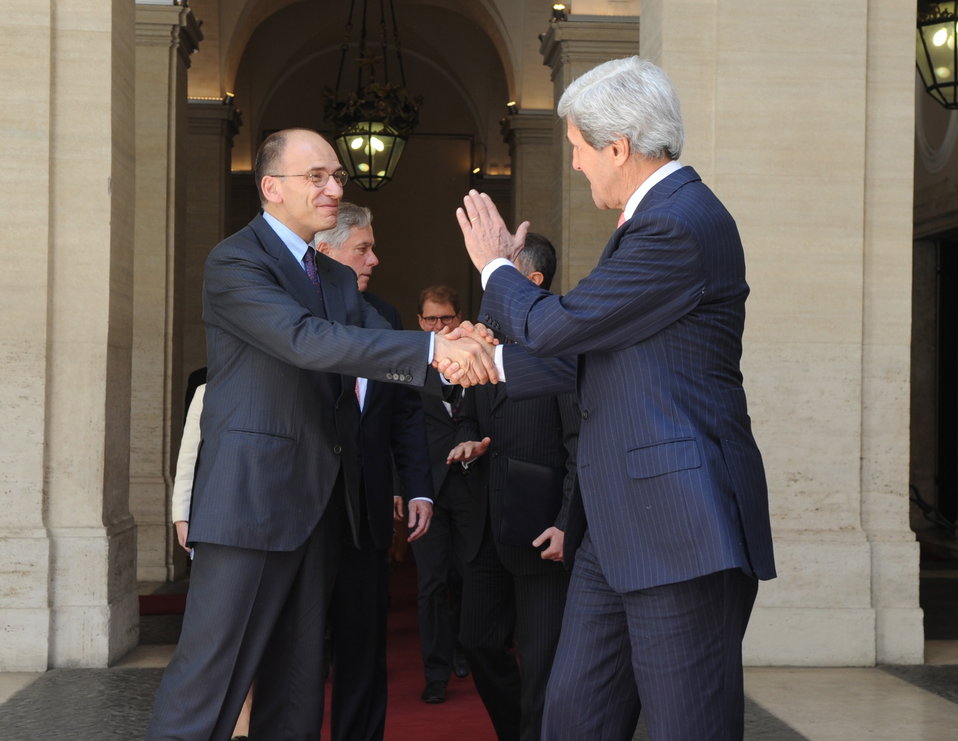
Secretary Kerry Bids Farewell to Italian Prime Minister Letta

U.S. Secretary of State John Kerry says goodbye to Italian Prime Minister Enrico Letta after their meeting at Palazzo Chigi in Rome, Italy, on May 9, 2013.